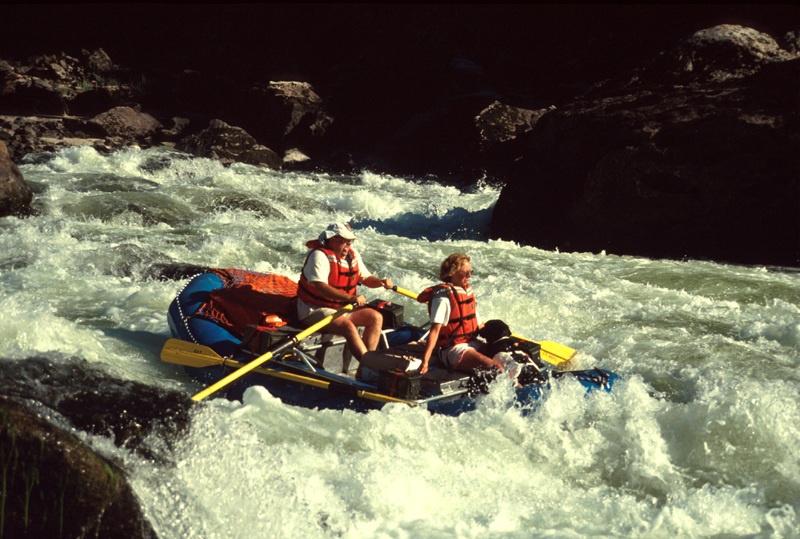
Rafting Lower Salmon River Cottonwood Field Office UCSC Upper Columbia Salmon Clearwater District